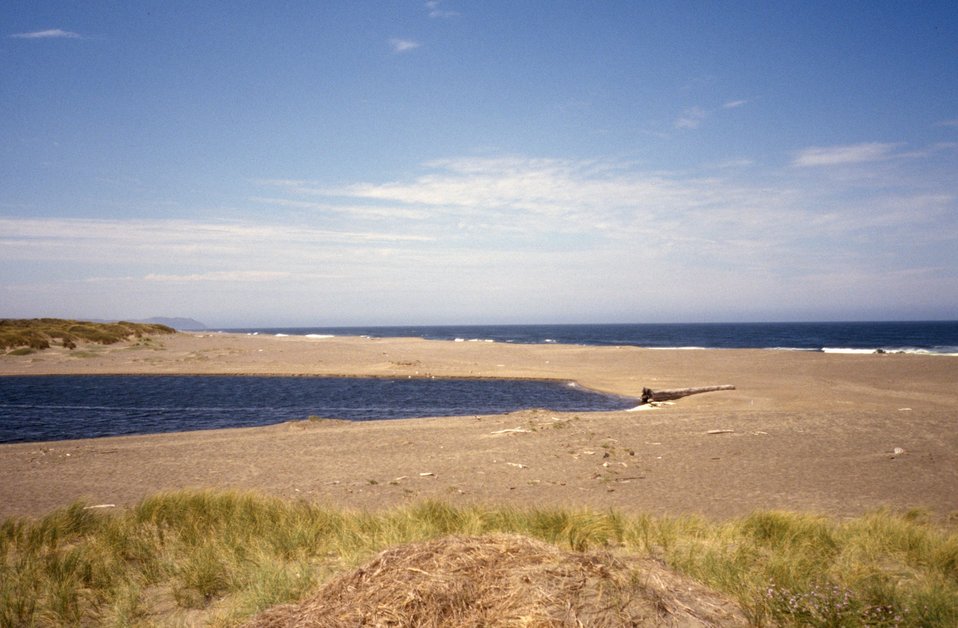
Point Reyes Great Beach